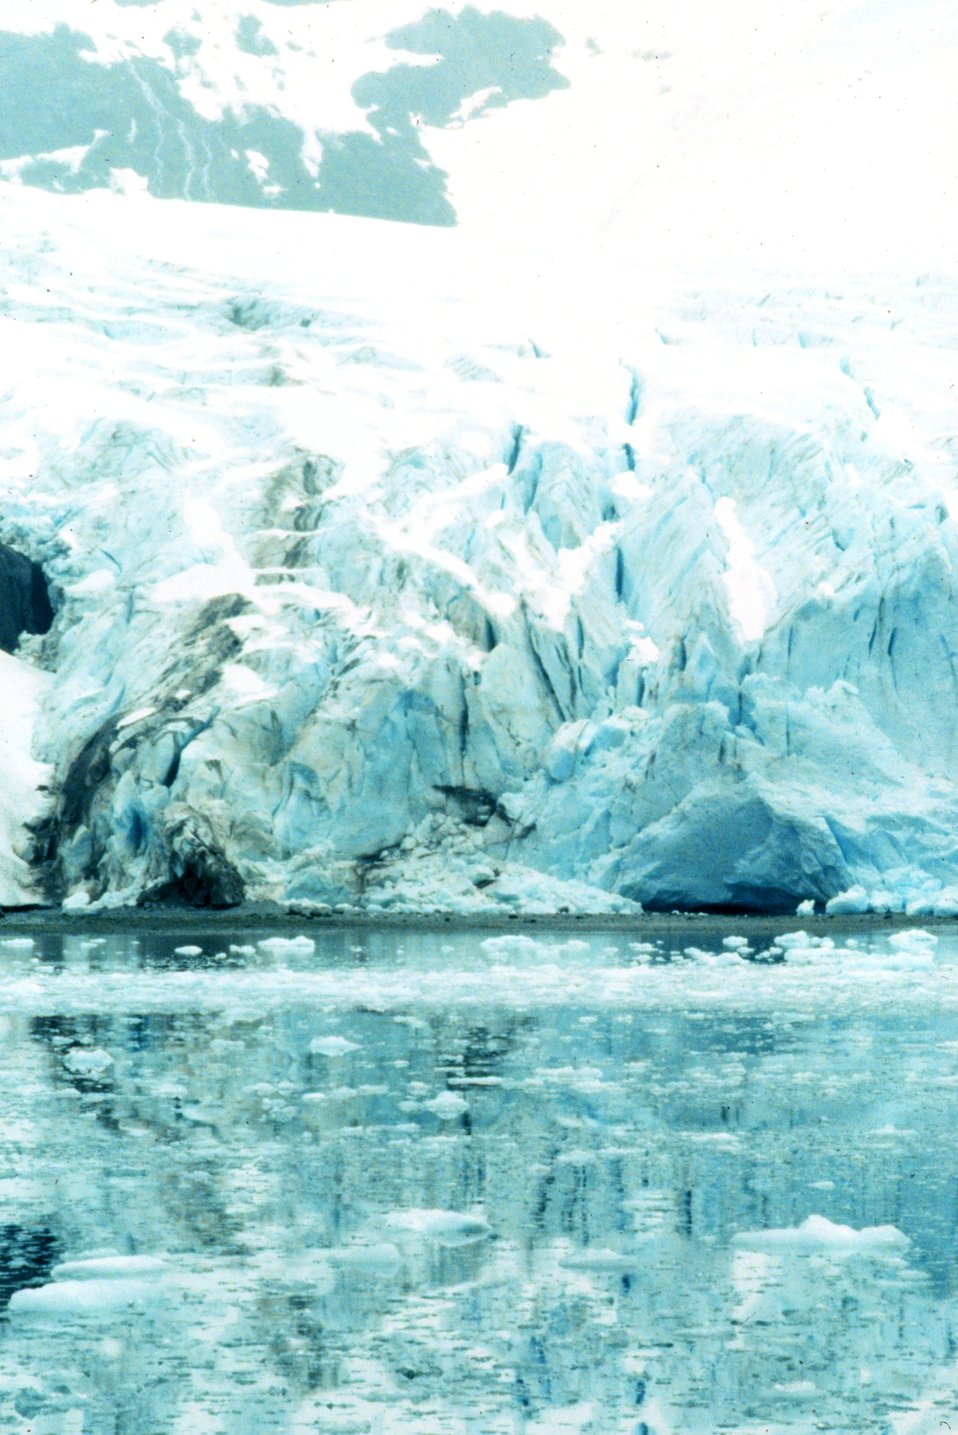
Glacier in Kenai Fjords